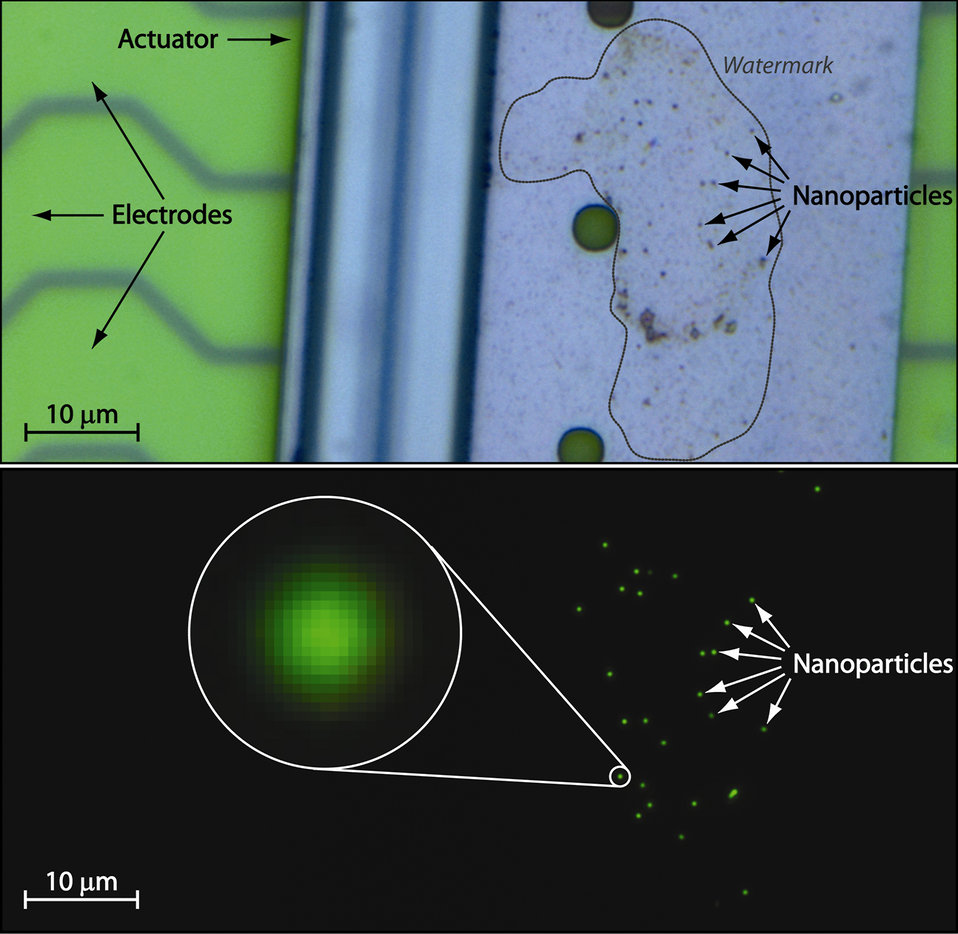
Scratch Drive Actuator

A micromachine called a scratch drive actuator, labeled with fluorescent dots, (top) rests atop a platform underlain by an electric circuit that initiates the device?s step-by-step movements. Under a fluorescence microscope, the nanoparticles appear as points of light in a starlike constellation (bottom), making it possible to measure small changes in the position and orientation of the device at each step.